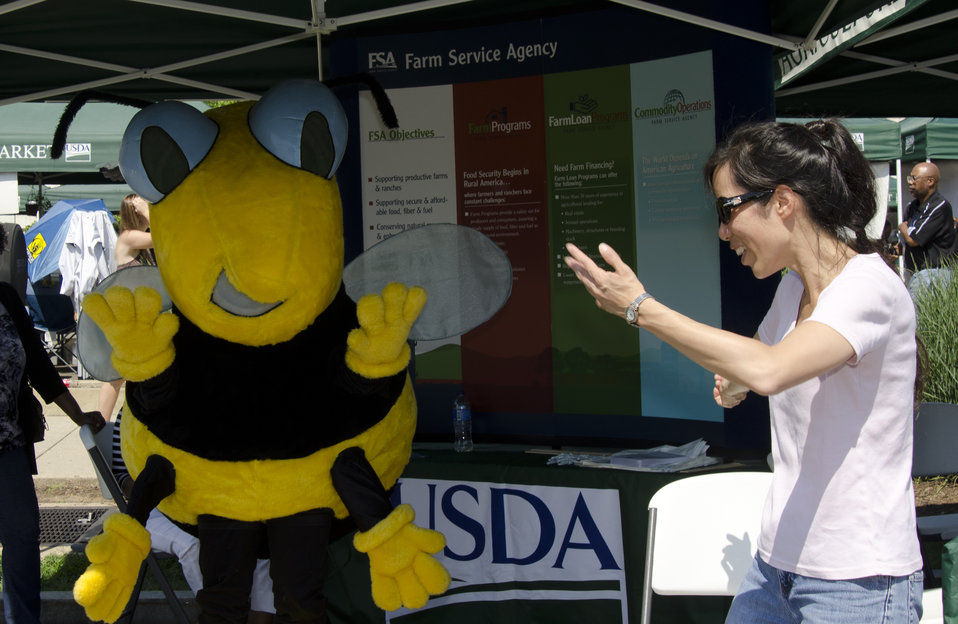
Peoples Garden Pollinator Display at the U.S. Department of Agriculture in Washington, DC, on Friday, June 21, 2013.